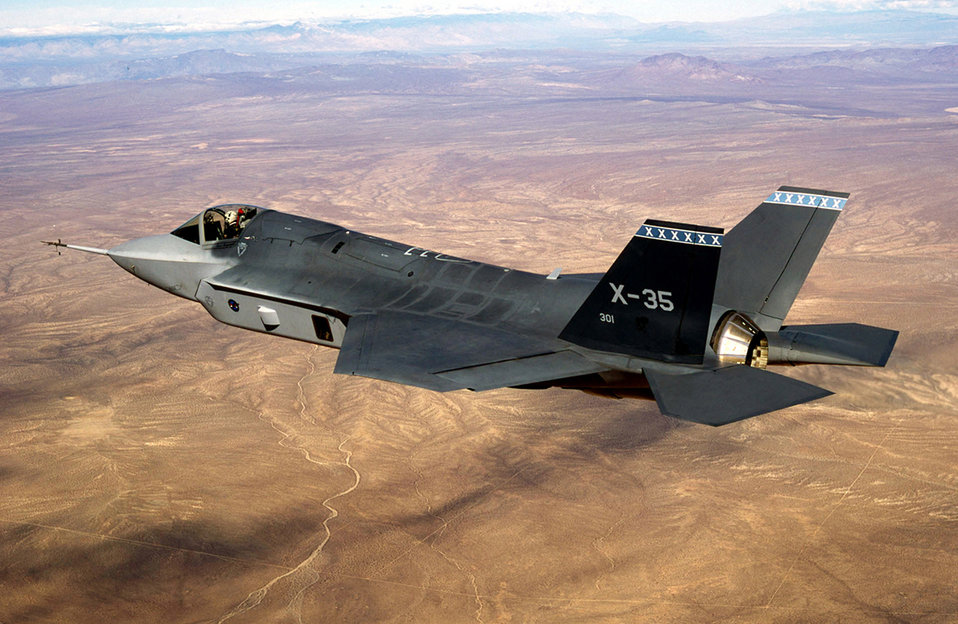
Joint Strike fighter

Lockheed Martin's X-35A Joint Strike Fighter Concept demonstrator broke the sound barrier Nov. 21, 2000, just 25 hours and 25 test flights into its airborne program at Edwards Air Force Base, Calif. The X-35A is being re-fitted into the X-35B and has begun ground testing in preparation for its short takeoff/vertical landing demonstrations.